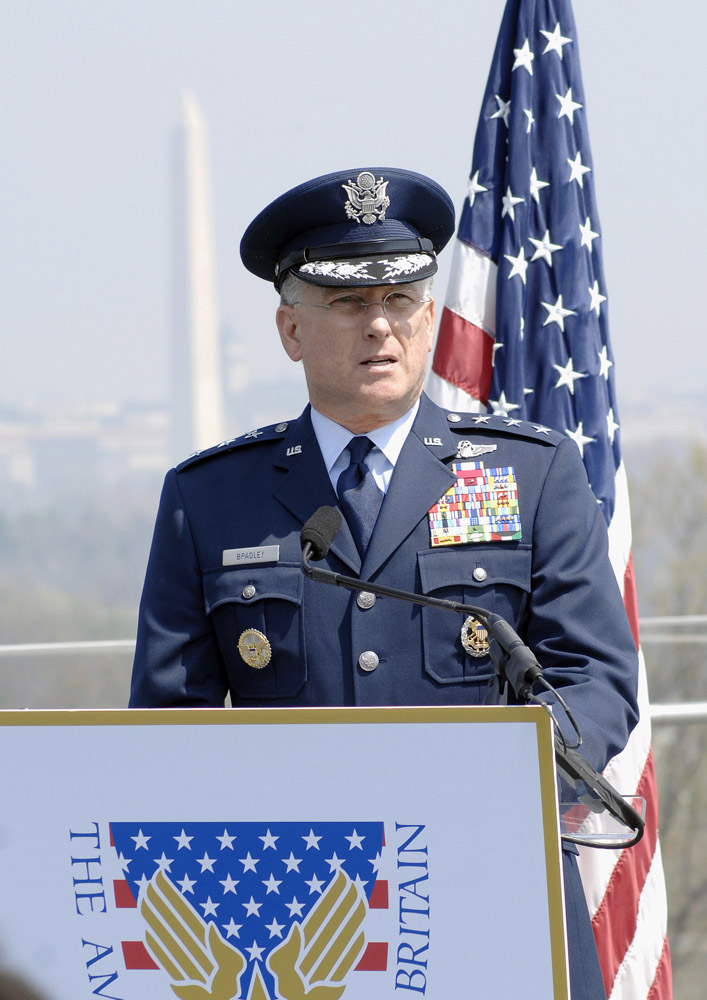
Heritage flight

Lt. Gen. John A. Bradley represents the Air Force at a ceremony honoring the 30,000 American Airmen who gave their lives flying from British bases during World War II April 10 at the Air Force Memorial in Arlington, Va. The event was arranged by the American Air Museum at Duxford, England, which is celebrating its 10th anniversary. The first Americans to serve in England were based at Duxford in 1918. During World War II it was also home to the 78th Fighter Group from 1943 to 1945. General Bradley is the chief of Air Force Reserve.